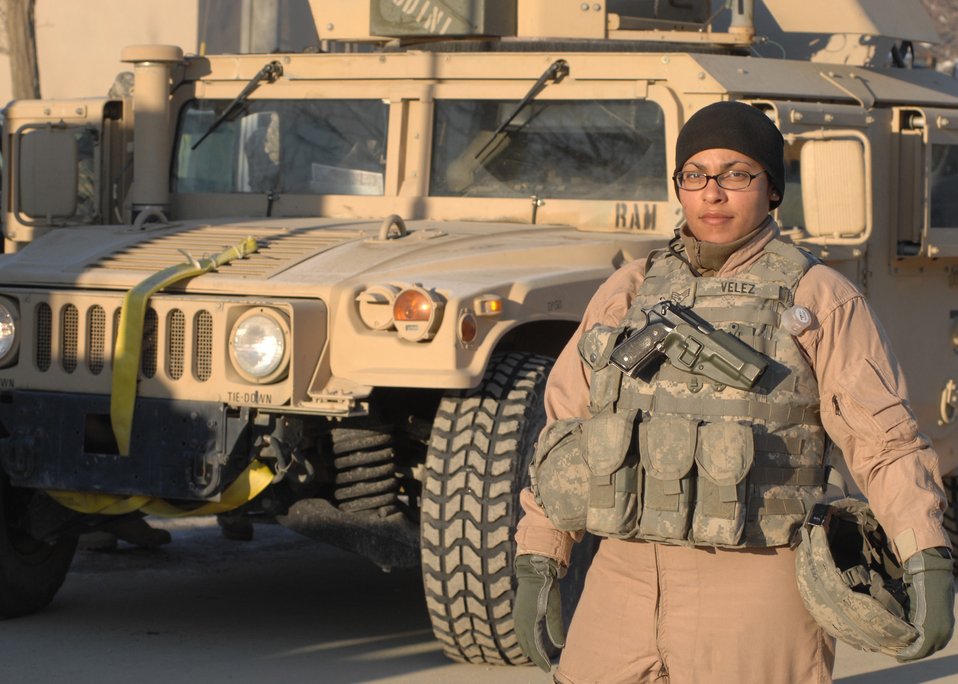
Female Airman from Bronx drives convoys in Afghanistan

Senior Airman Vanessa Velez prepares for a convoy mission Feb. 10 at Bagram Air Base, Afghanistan. Airman Velez, who is a vehicle maintenance controller with the 6th Logistics Readiness Squadron at MacDill Air Force Base, Fla., has driven at least 120 convoys during her 365-day deployment in Afghanistan. She is a convoy driver with the Bagram Provincial Reconstruction Team.